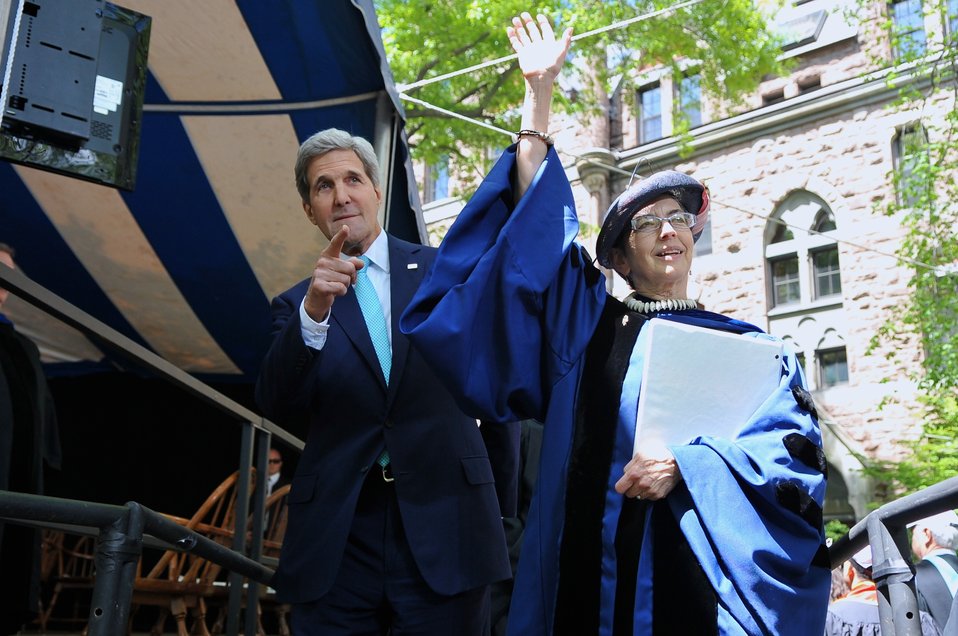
Secretary Kerry, Yale College Dean Miller Wave to Graduating Seniors in New Haven

U.S. Secretary of State John Kerry and Yale College Dean Mary Miller wave to graduating seniors as they take the stage on the campus in New Haven, Connecticut, to deliver their respective Class Day addresses on May 18, 2014.